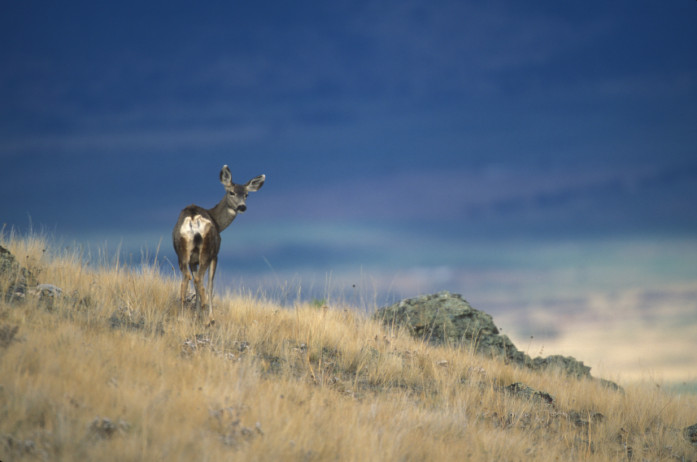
mule deer

National Bison Range